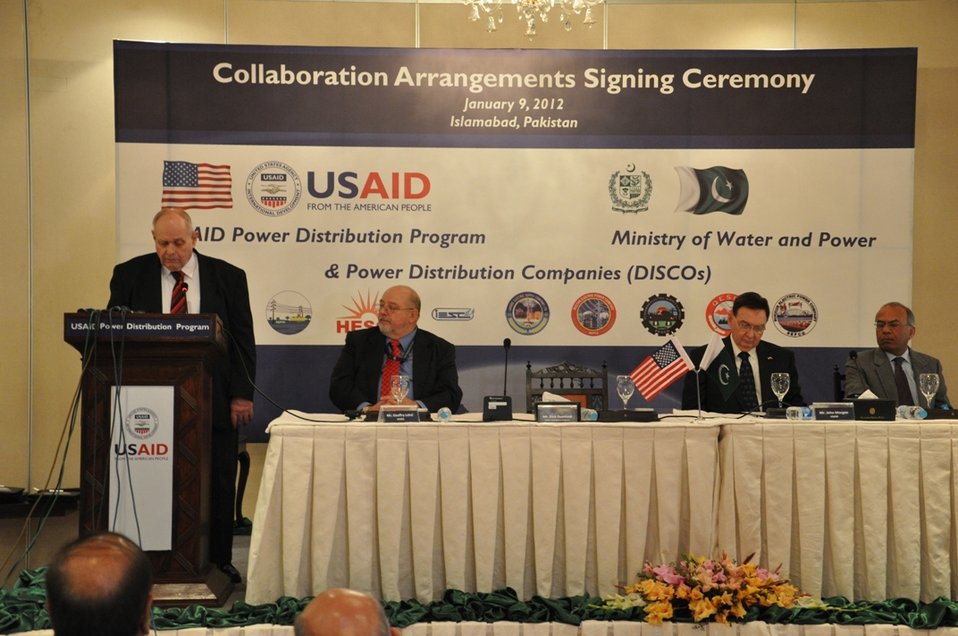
Dick Dumford, Chief of Party of the United States Agency for International Development (USAID) Power Distribution Program speaks at the Collaboration Arrangements Signing Ceremony

All nine of Pakistan’s government-owned Power Distribution Companies (DISCOs) signed agreements today with the U.S. government to collaborate on improving energy supply to consumers.